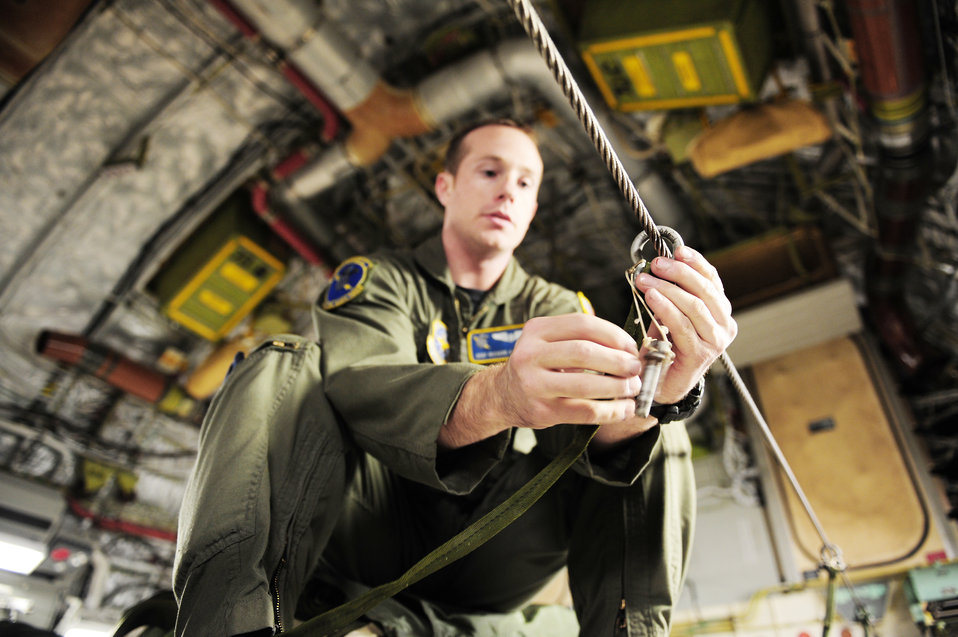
Meals, water delivered for Haiti relief

Staff Sgt. Richard Miner, a loadmaster assigned to the 43rd Operational Support Squadron at Pope Air Force Base, N.C., conducts a joint inspection aboard a C-17 Globemaster III before an air delivery mission in support of Operation Unified Response Jan. 21, 2010. The aircrew, from the 437th Airlift Wing at Charleston Air Force Base, S.C., delivered 40 container delivery system bundles totaling 67,800 pounds of Meals, Ready to Eat and bottled water.